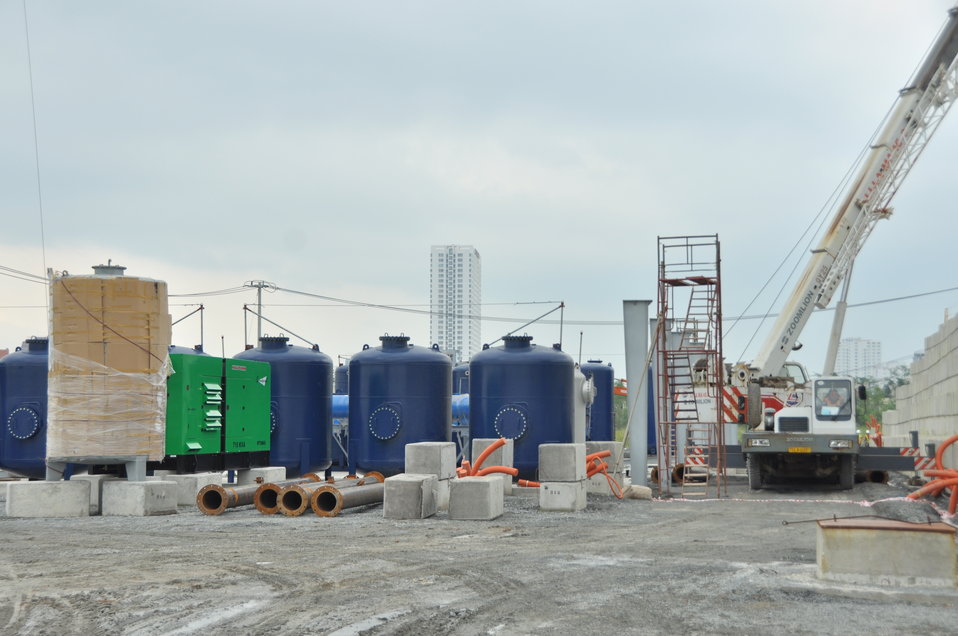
USAID Dioxin Contamination Project Progress: Water Treatment System

Progress at the Environmental Remediation of Dioxin Contamination Project at the Danang Airport

December 4, 2013